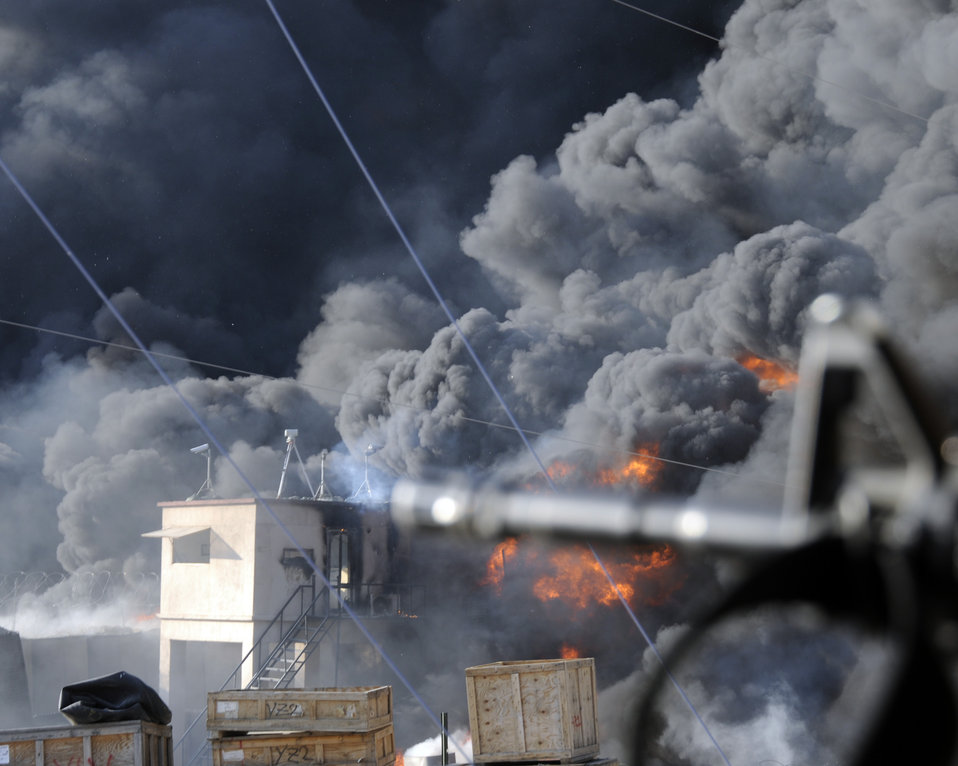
Senior Airman Chanise Epps

Air Force photographer Chanise Epps documenting attack